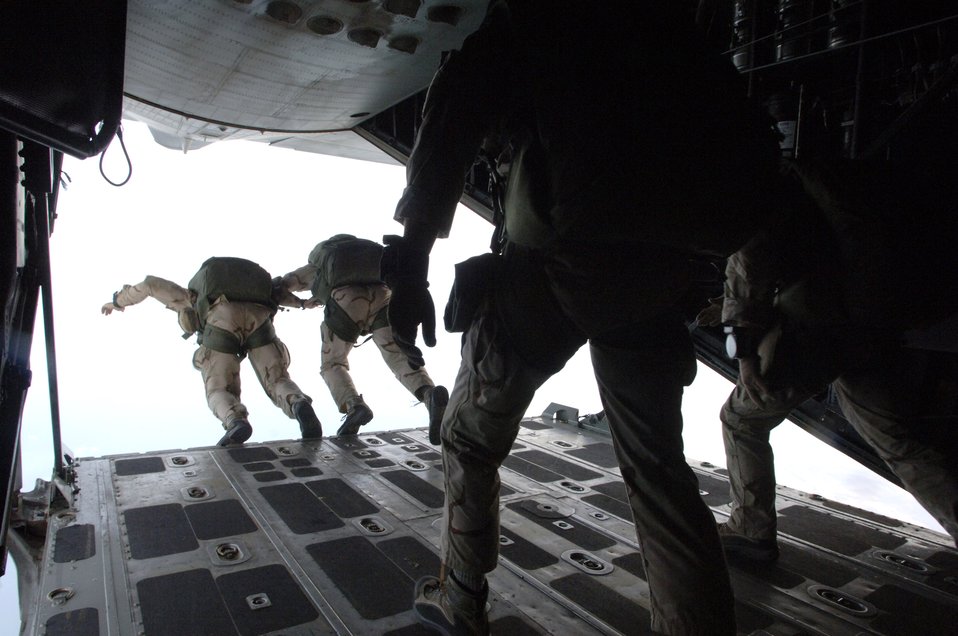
Free-falling

Air Force pararescuemen begin free-fall Dec. 14 on the cargo ramp of a C-130 Hercules, from 10,000 feet above Camp Lemonier, Djibouti. The training jump helps the Airmen stay proficient in skills that are frequently used in their profession.